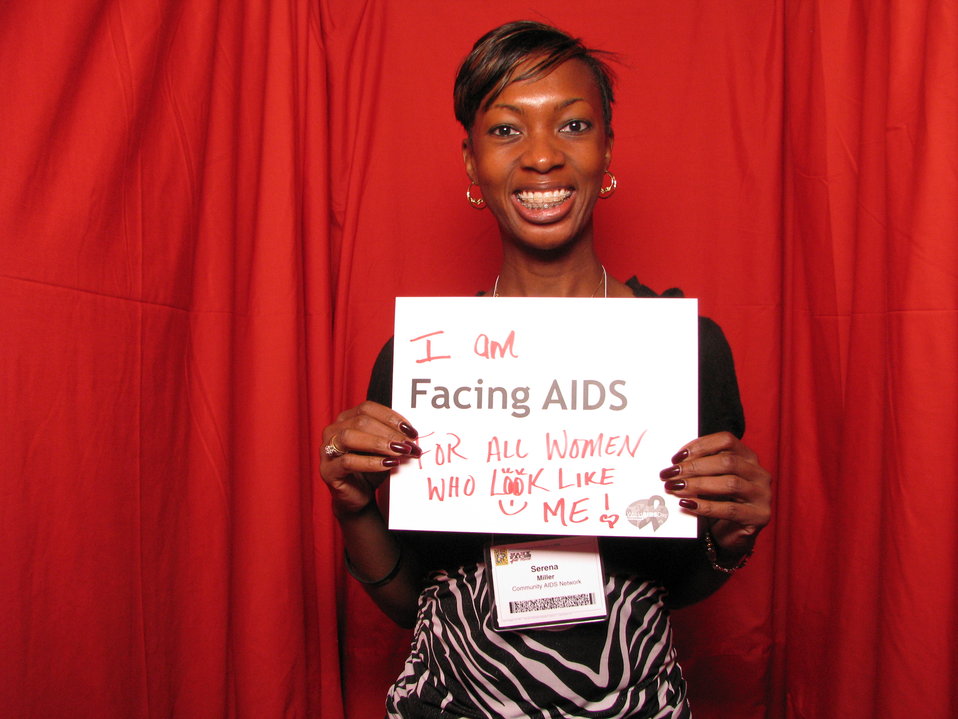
I am FACING AIDS FOR ALL THE WOMEN WHO LOOK LIKE ME!

From the AIDS.gov photo booth at the U.S. Conference on AIDS, September 2010 (Orlando, FL).